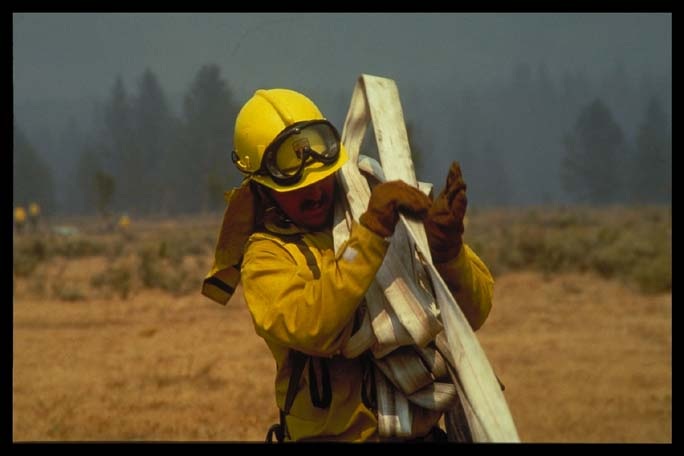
Engine crewmember